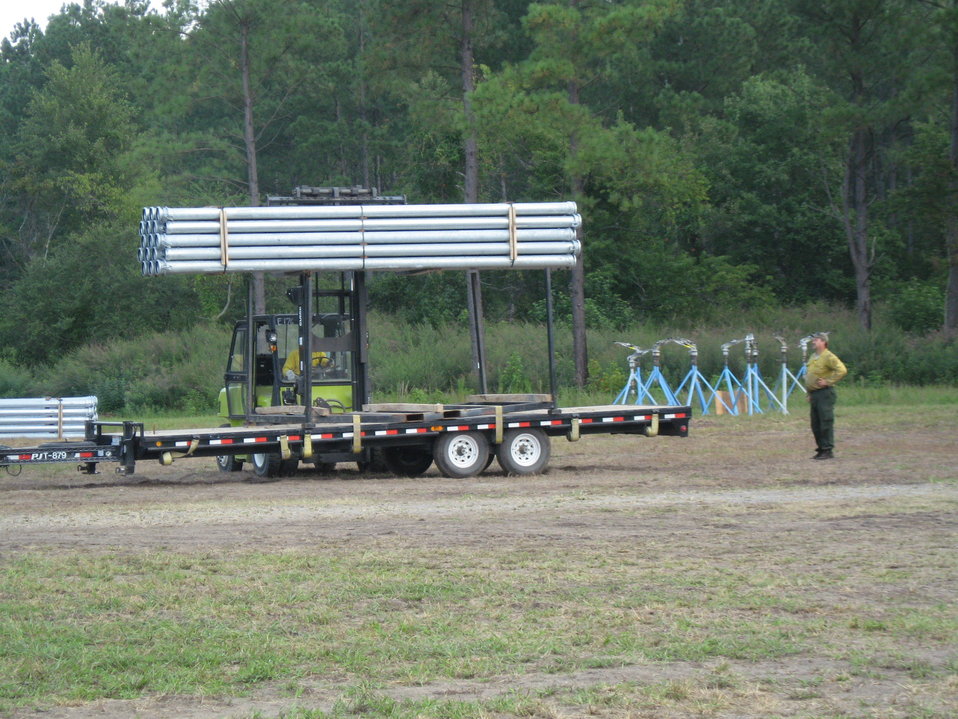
Preparing to plumb

Suffolk, VA, August 2011: A fork lift loads pipes on a trailer to transport them to the Lateral West Fire on Great Dismal Swamp National Wildlife Refuge. Sprinklers mounted on tripods sit in the background. An intricate system of pumps, pipes, and sprinklers saturates deep peat fire to put the fire out and reduce smoke.